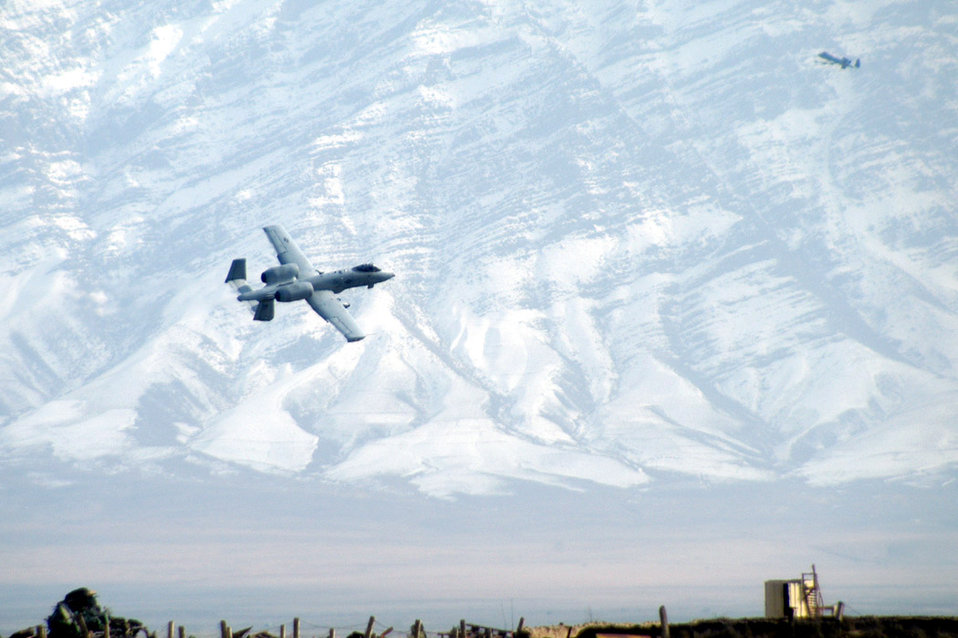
Thunder mountains

OPERATION ENDURING FREEDOM -- Two A-10 Thunderbolt IIs from the 455th Expeditionary Operations Group climb after takeoff against the backdrop of the snow-covered mountains of the Hindu Kush at Bagram Air Base, Afghanistan, on Feb. 21. The A-10s provide close-air support for Army ground forces in the region as part of Operation Enduring Freedom.